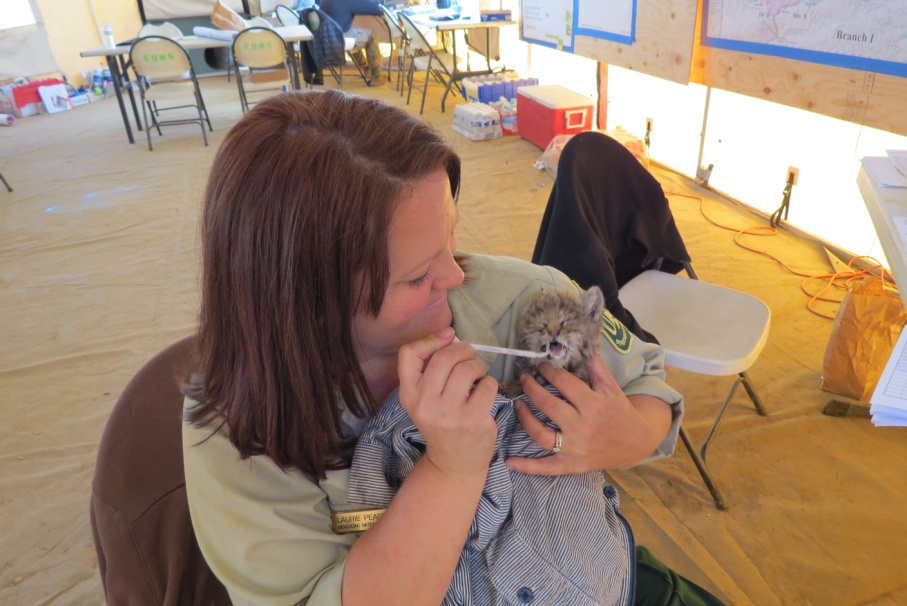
Rescued Bobcat Kitten

U.S. Forest Service Fire Information Officer Laurie Pearson feeds formula to “Chips” on Sep. 5, 2012. “Chips” is an orphaned Bobcat kitten recovered from the Chips fire near Lake Almanor, CA on Aug. 25, 2012 and is being treated at the Lake Tahoe Wildlife Care facility. The Lake Tahoe Wildlife Care group (LTWC) is a non-profit organization, run by volunteers, “whose function is to raise, rehabilitate and release orphaned and injured wild birds and animals.”